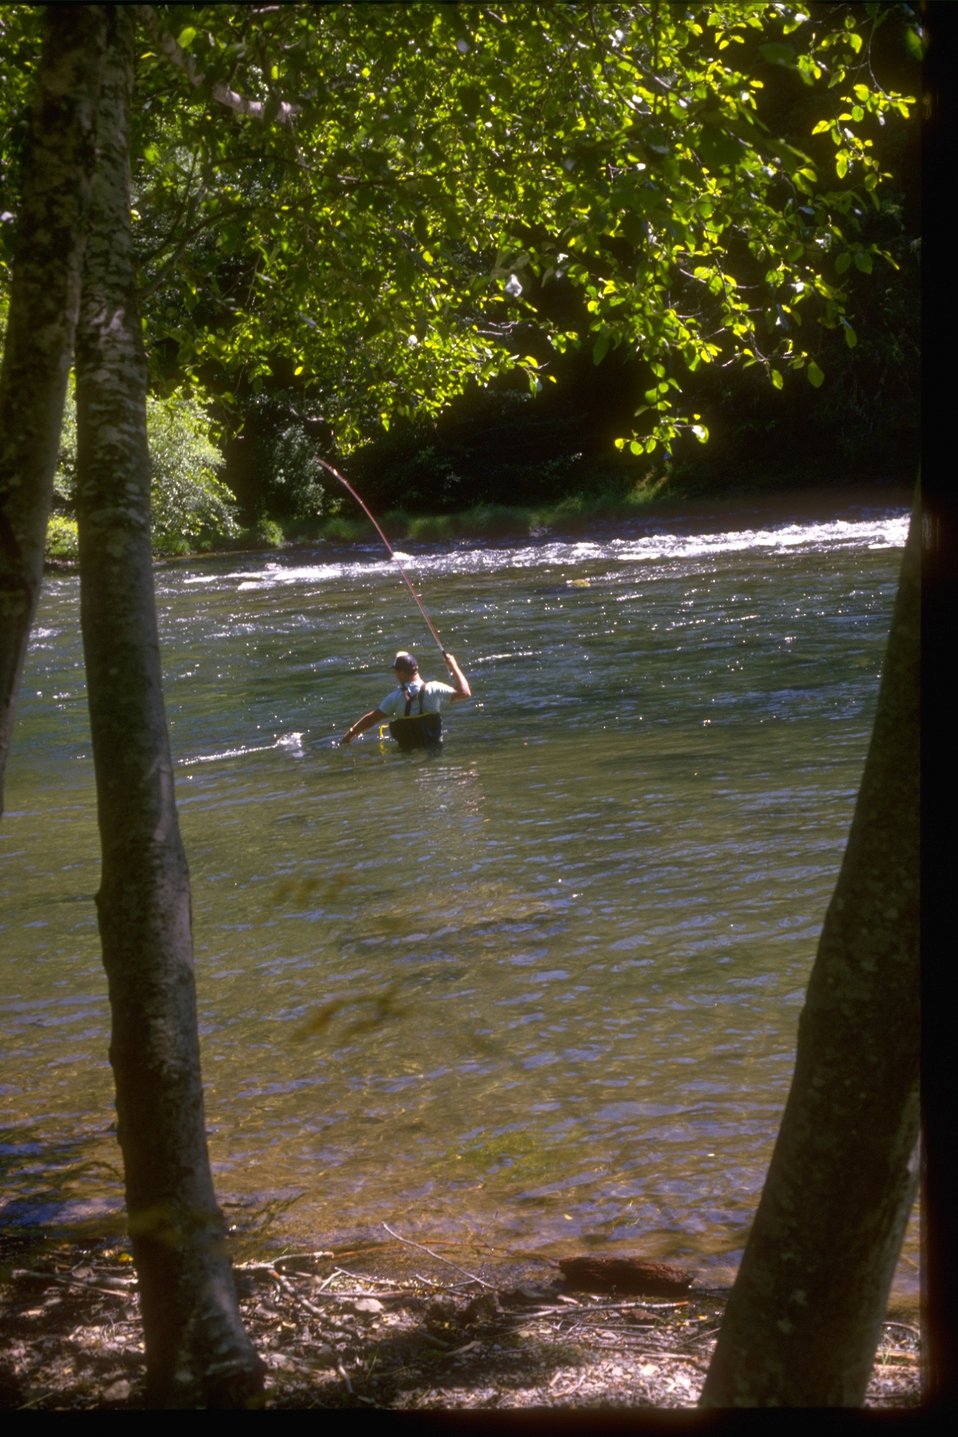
North Umpqua River Series: fisherman.